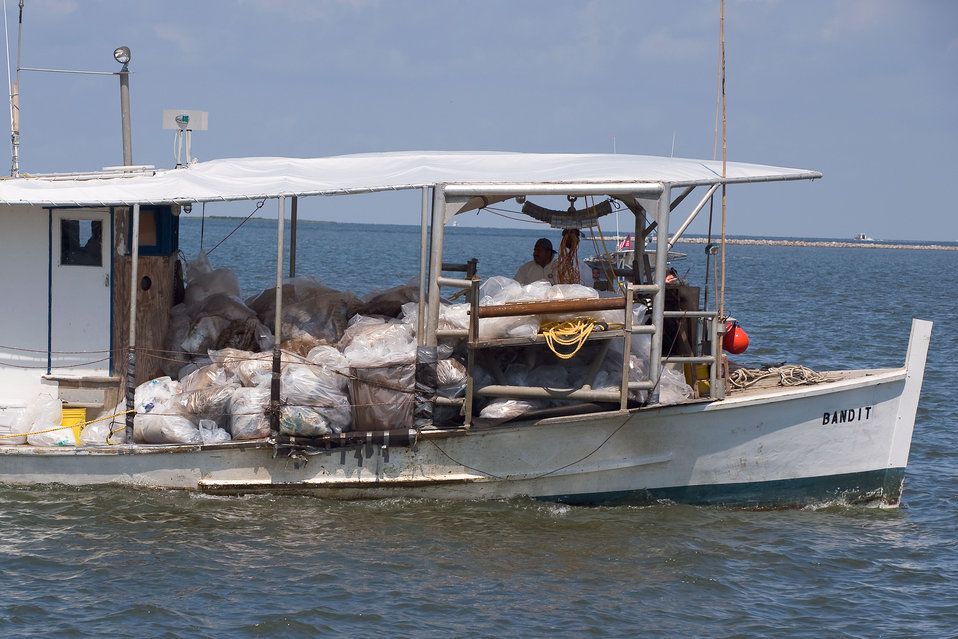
August 6, Private Vessel of Opportunity returns with oil waste collected offshore

Over a thousand private vessels and crews have shifted their operations to help with boom and collect oil waste.